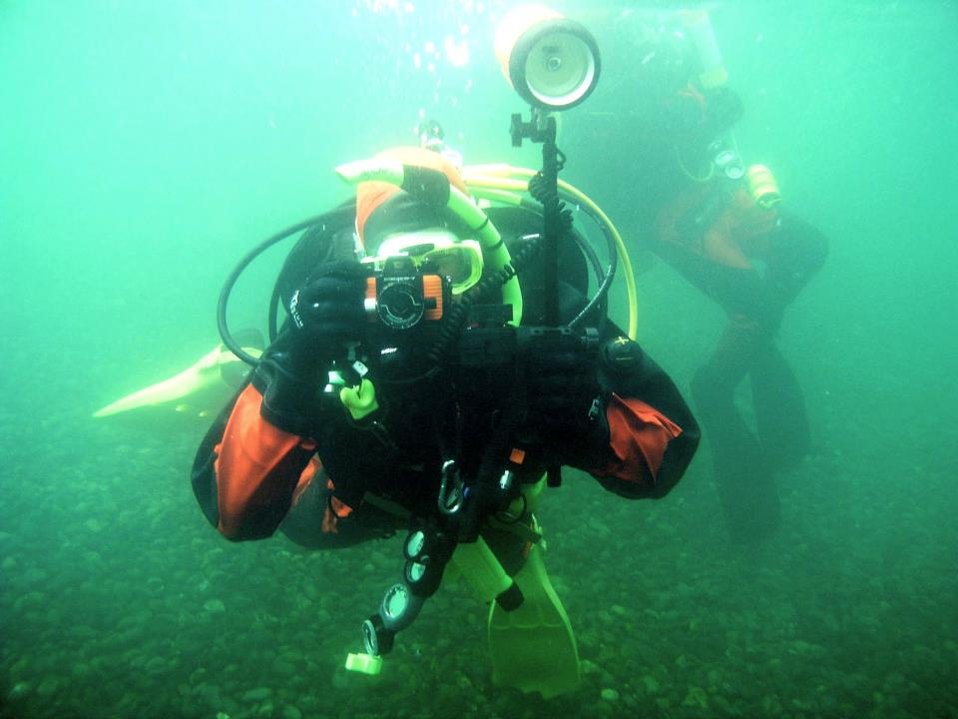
(Earlier photo) 2004, Reflecting on Documerica Underwater

If you have followed our historic photography project “Documerica,” you may have noticed a few underwater scenes. That left our divers pondering the digital improvements in underwater photography.

Read their thoughts on the the Evolution of Underwater Photography

Follow their adventures at www.facebook.com/EPAdivers
EPA diver Sean Sheldrake with a Nikonos V film camera